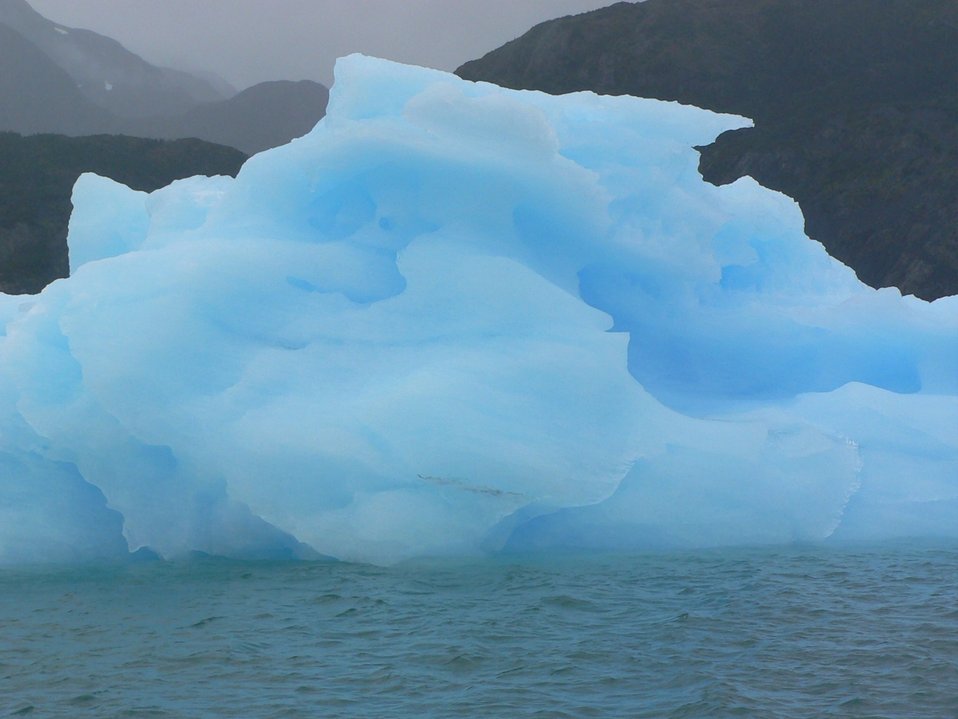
An iceberg in Prince William Sound. The mountains in the background are veiled in mist.